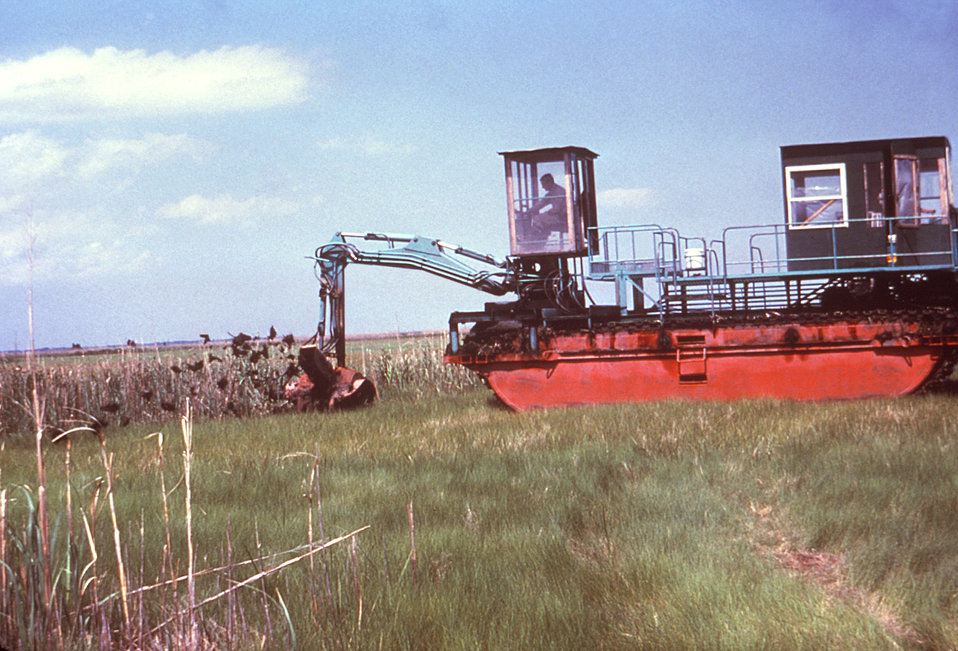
This amphibious rotary ditcher (ARD) was outfitted with a 'swivel-cutter' head, which was used in the process of creating a drainage ditch.